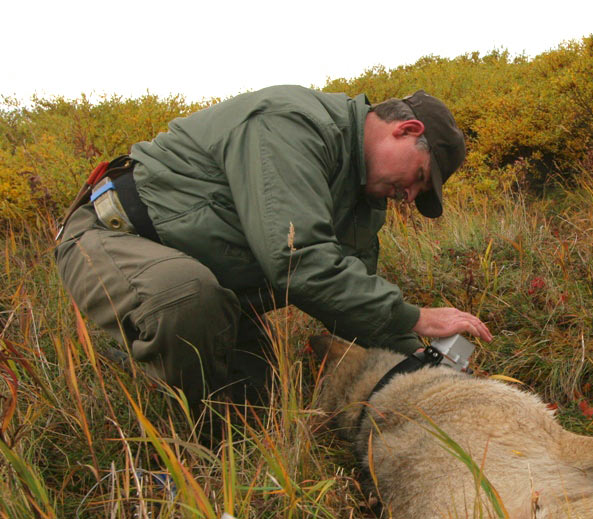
Pat Walsh-Alaska Region

Army veteran Patrick Walsh works as a Supervisory Biologist at Togiak National Wildlife Refuge.